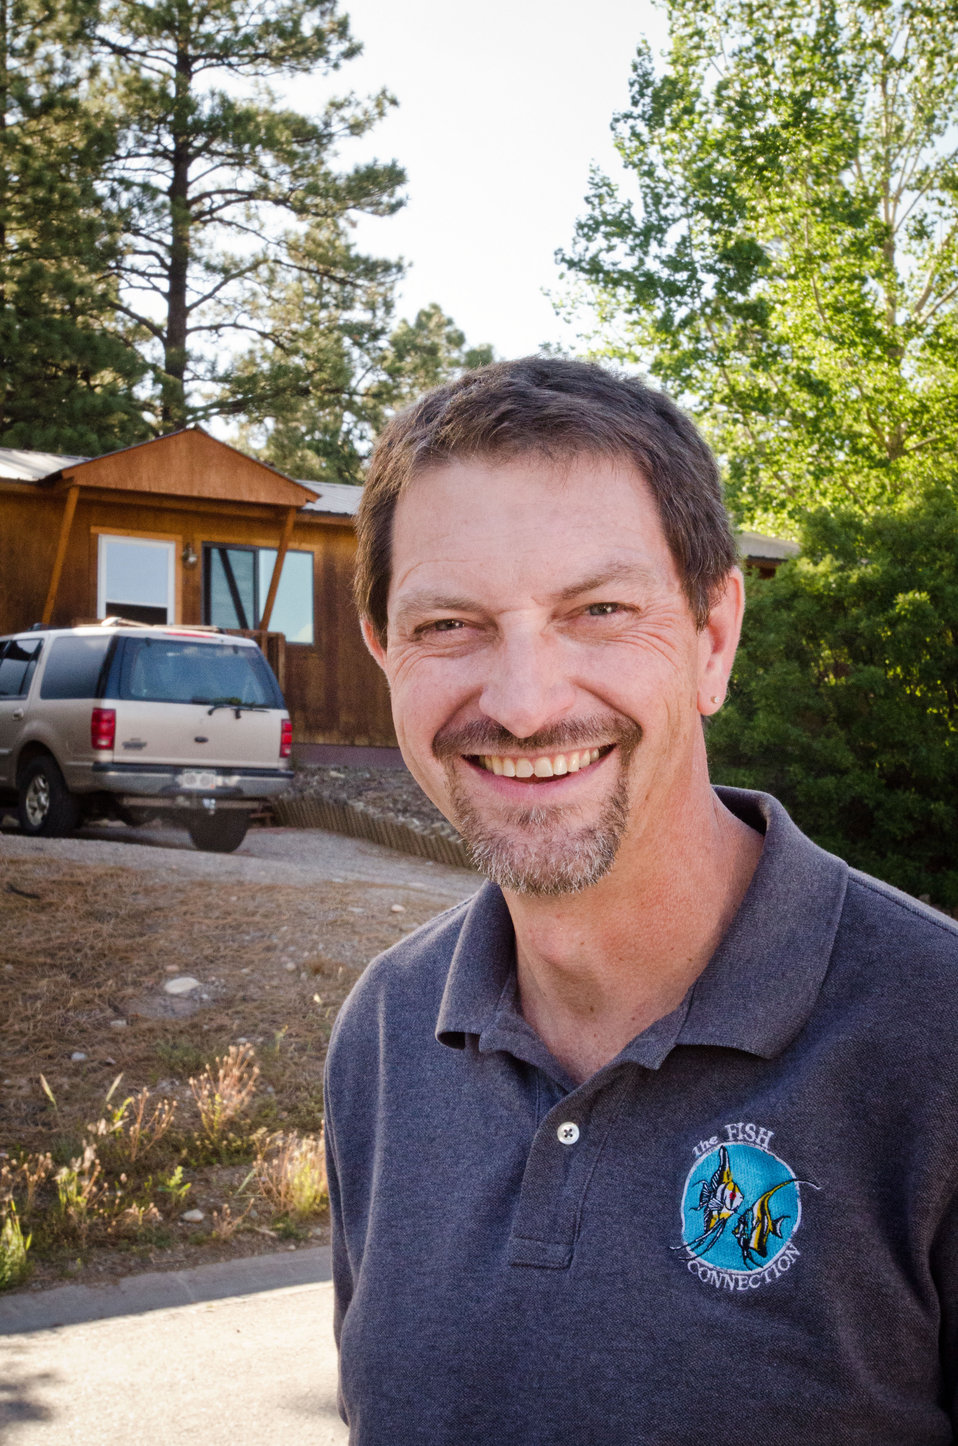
Colorado native and local business owner Bruce Longwell at his Durango, CO home on July 17, 2012. Mr. Longwell financed the single-family house with a U.S. Department of Agriculture (USDA) Rural Development (RD) Housing Assistance loan. This provided lower monthly payments than his prior rental home. Homeownership provides potential gains through home equity.